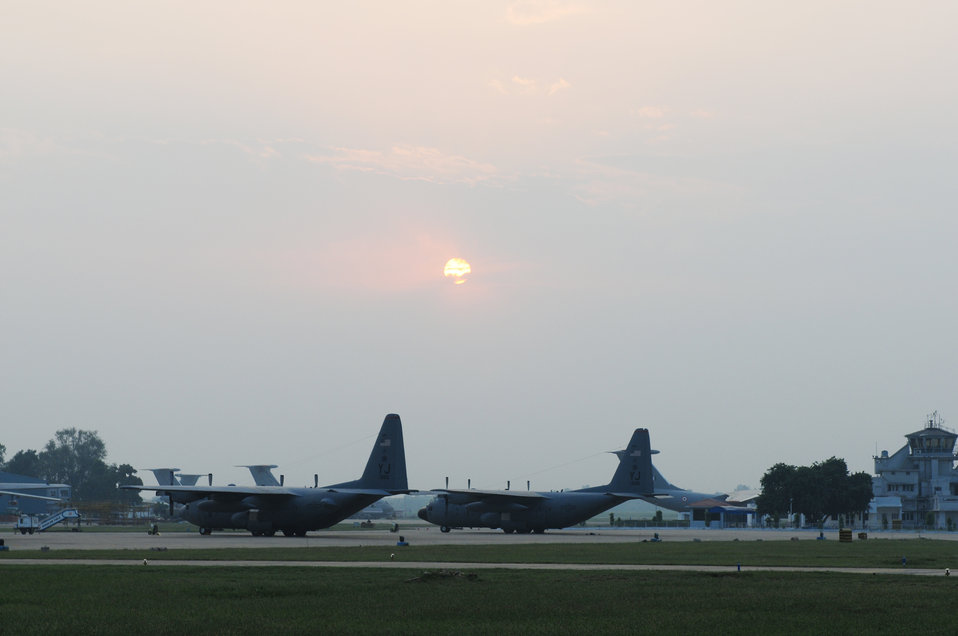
Globemaster conducts first mission for Cope India

two U.S. Air Force C-130 Hercules aircraft from the 36th Airlift Squadron at Yokota Air Base, Japan, parked under a Indian sunset at Air Force Station Agra, India. The aircraft along with a C-17 Globemaster III and more than 150 U.S. Air Force and Army personnel are deployed here as part of exercise Cope India, a humanitarian assistance disaster relief exercise Oct. 19 to 24.